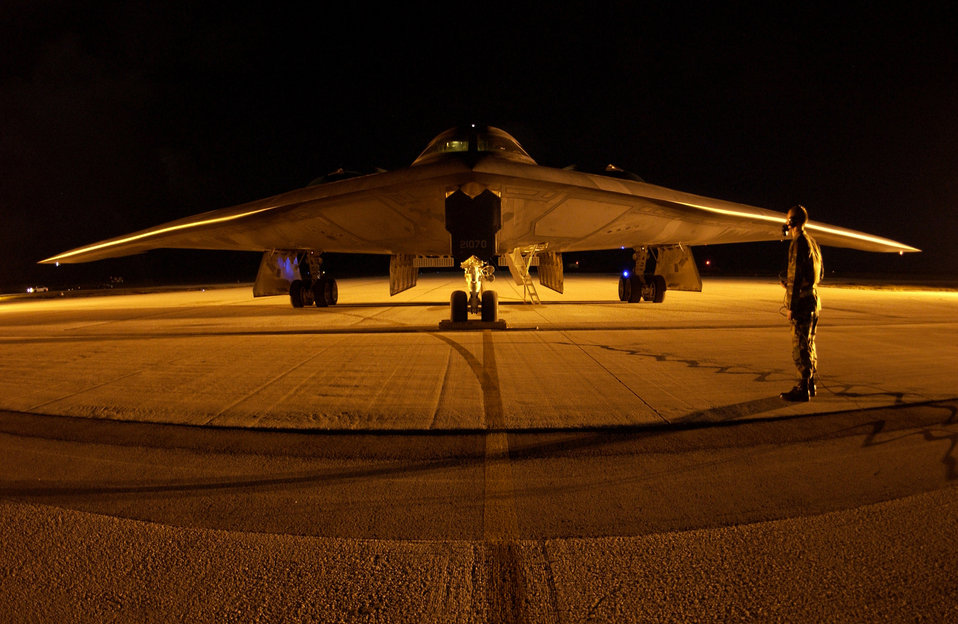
Global Power

A crew chief watches over a B-2 Spirit stealth bomber while air crews switch shifts at Andersen Air Force Base, Guam Feb. 5. The bomber, based at Whiteman AFB, Mo., was here as part of Air Combat Command’s ongoing global power missions. The missions allow aircrews to train for the long flights from stateside locations to the overseas theater.